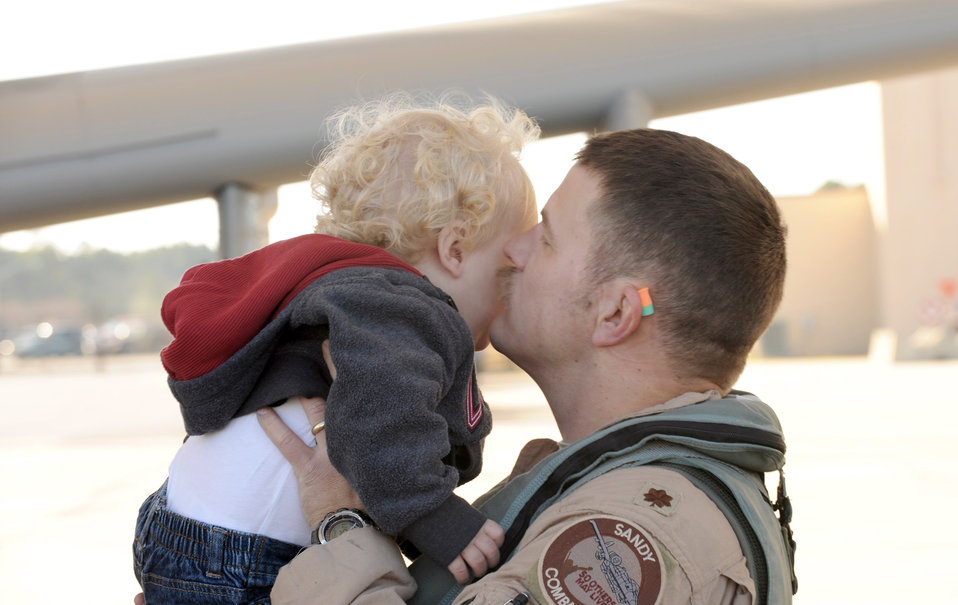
I've missed you

Maj. Dennis Ott kisses his son, Vaughn, after returning to Moody Air Force Base, Ga., Dec. 9, 2010, from his deployment to Afghanistan. Major Ott is a pilot assigned to the 75th Fighter Squadron.